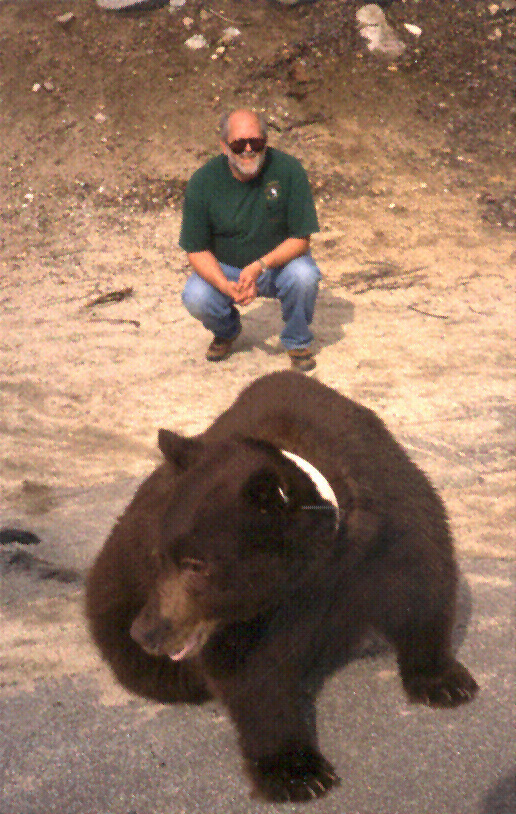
Greg Van Stralen, Program Manager for the Partners Program in the Central Washington Field Office, served in the Army from 1971 to 1972. He got degrees in Biology in his 40s and started working for the Service shortly before he turned 50.